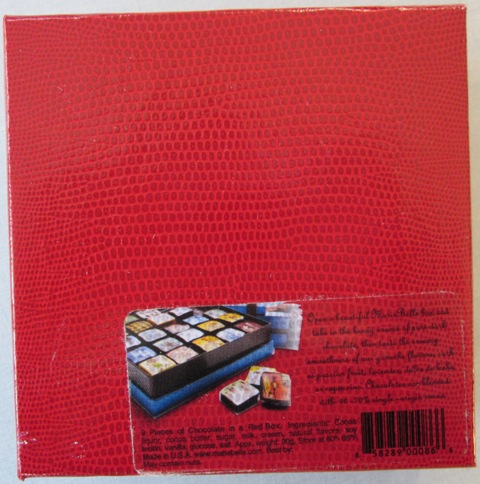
RECALLED - Chocolate Candy

December 23, 2011 - Product Recall - Maribel Sweet’s Inc. Recalls Their New York Handbag Collection Gourmet Chocolate Candies Due To Undeclared Tree Nuts And Peanuts.